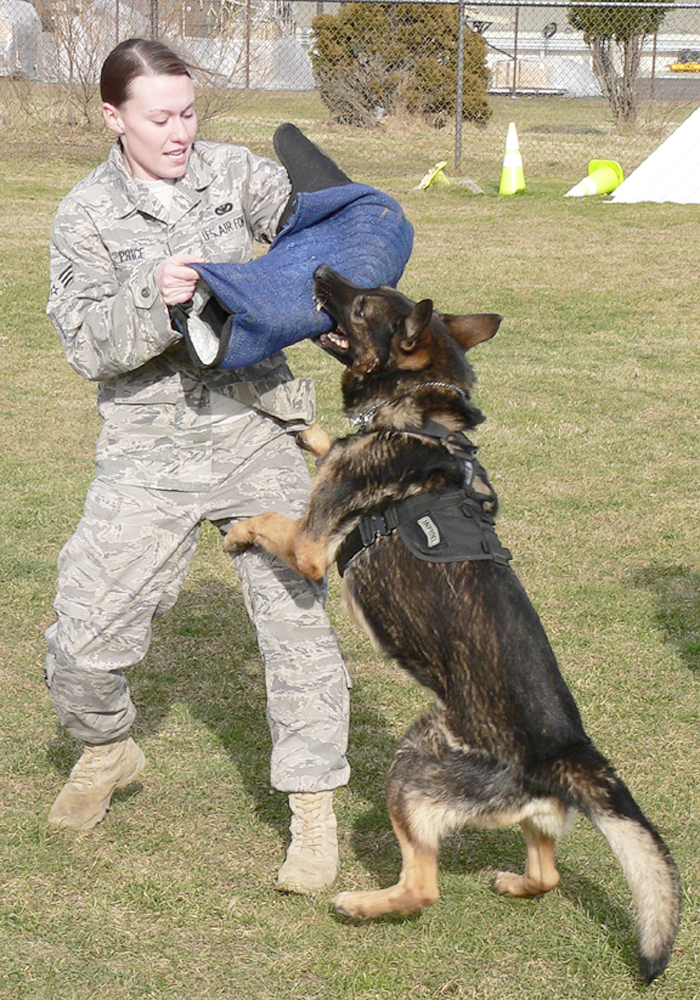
A dog's life at McGuire

Senior Airman Allison Price, 87th Security Forces Squadron dog handler, leads a dog in a controlled aggression exercise at Joint Base McGuire-Dix-Lakehurst, N.J., Jan. 5, 2010. Military working dogs are used in several capacities - detecting drugs and explosives, deterring threats and protecting their handlers.